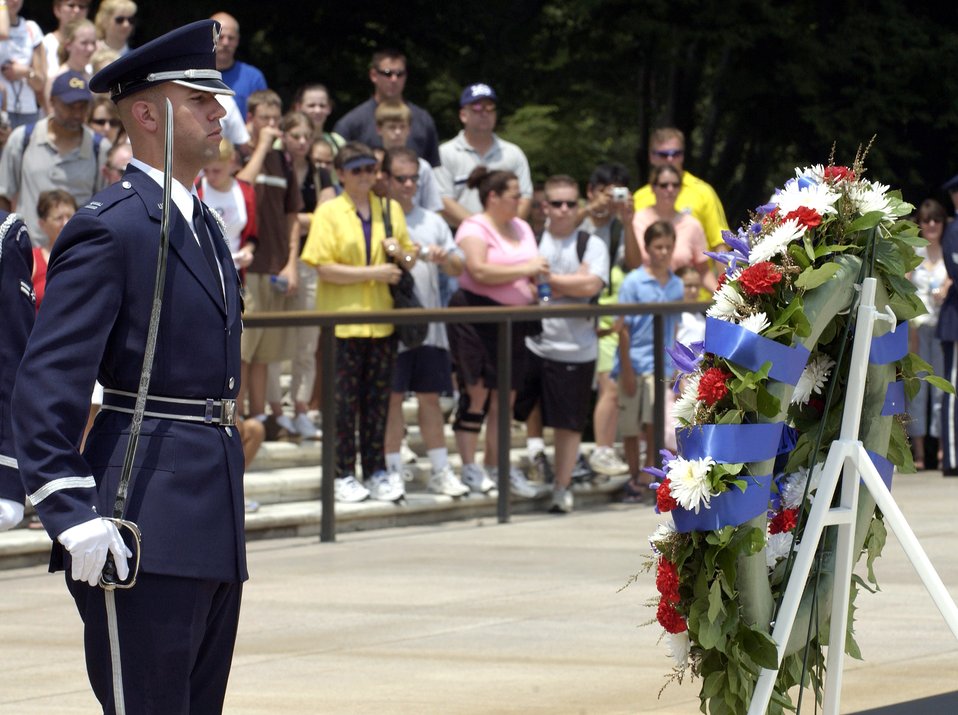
WWII 60th Anniversary Airpower Commemoration Wreath Laying ceremony

WASHINGTON -- A member of the U.S. Air Force Honor Guard renders honors at Arlington National Cemetery's Tomb of the Unknowns June 30 during a ceremony commemorating airpower and the 60th anniversary of World War II. Air Force Chief of Staff Gen. John P. Jumper officiated at the event.